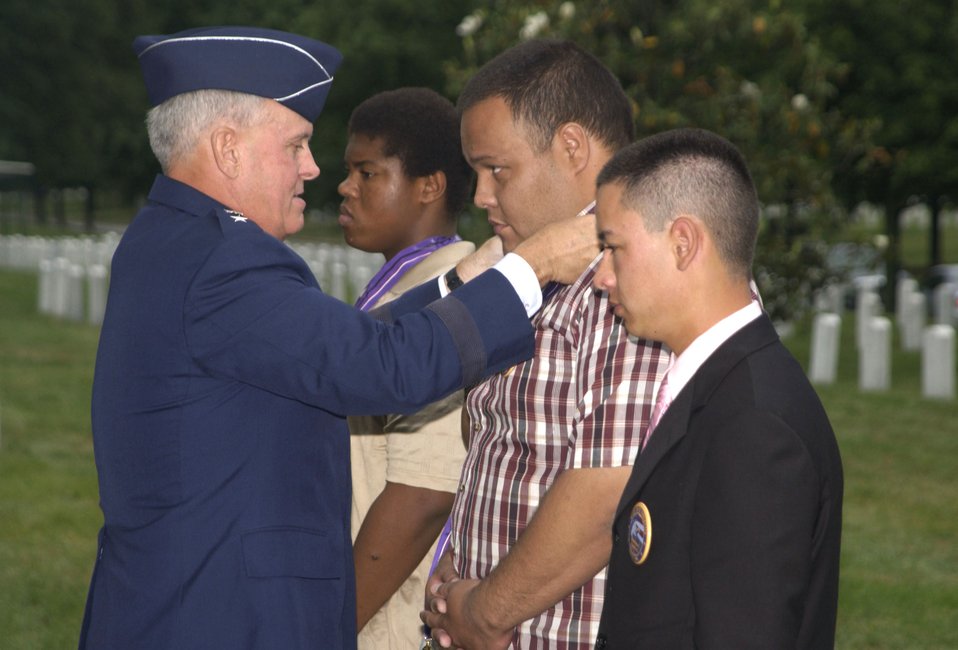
Khobar Towers 10th Anniversary

Rafael Haun, the son of Capt. Leeland Timothy Haun, is presented the Gold Medal of Remembrance by Lt. Gen. Stephen G. Wood on Sunday, June 25, at Arlington National Cemetery, Va. Captain Haun was one of 19 Airmen who died in the terrorist bombing of Khobar Towers at Dhahran Air Base, Saudi Arabia, on June 25, 1996. Family members and friends of the Airmen lost in the Khobar Towers bombing gathered for a remembrance ceremony. General Wood is the Air Force deputy chief of staff for strategic plans and programs.